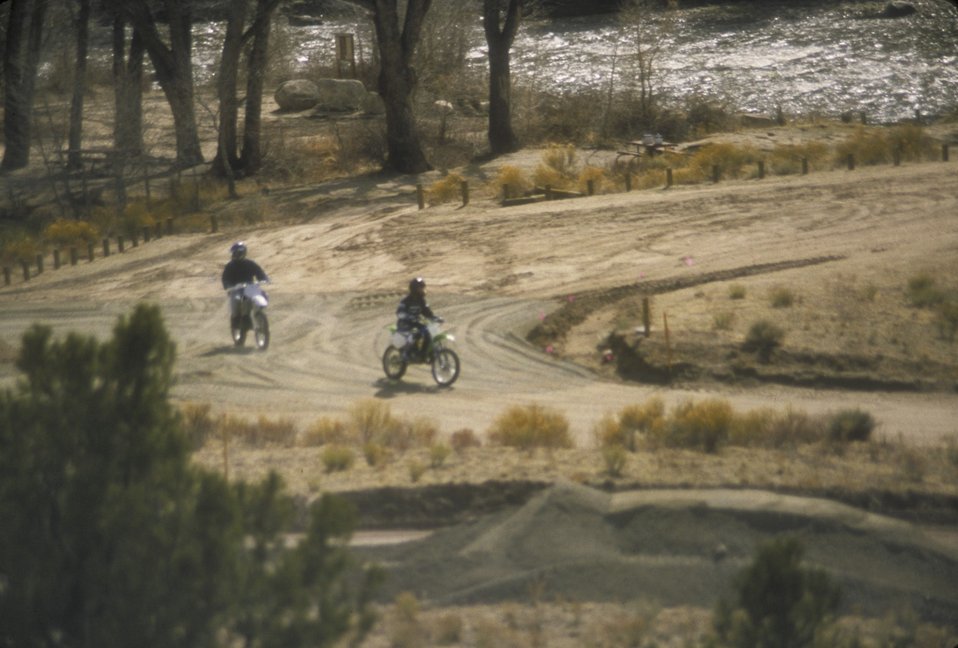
Off-highway vehicle trail on public land.